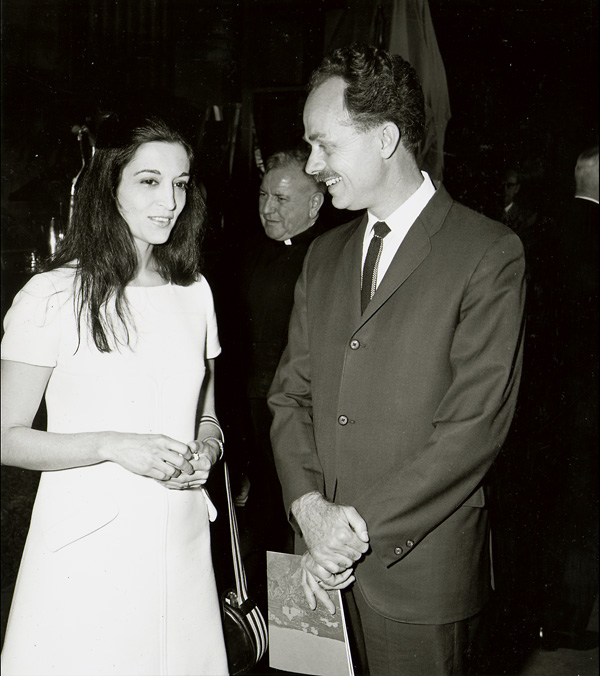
Marisol Escobar (1930- ) - Women Artists

Sculptor, Bronze statue of Father Damien of Hawai'i for the National Statuary Hall Collection.